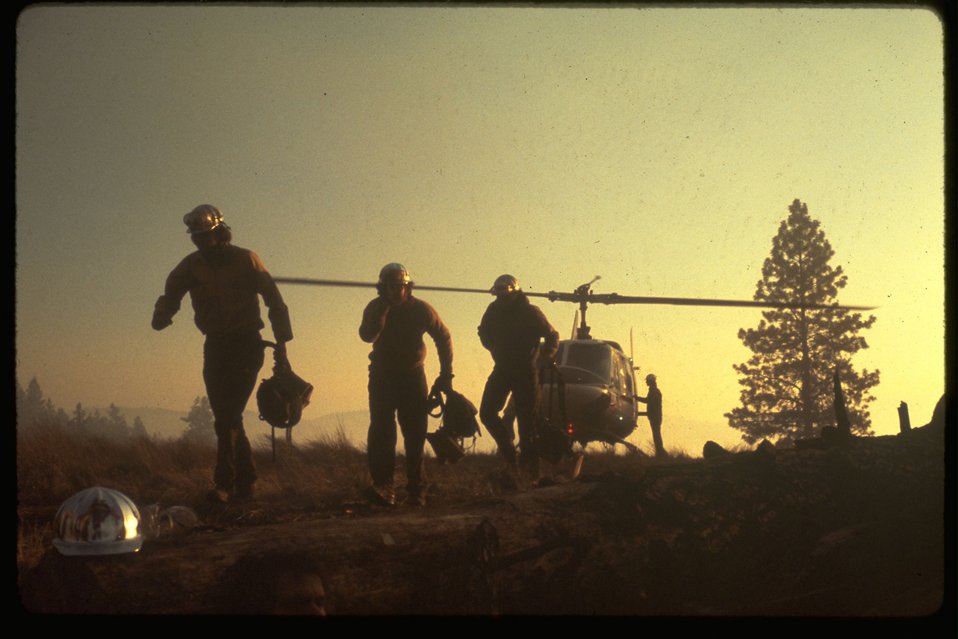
Firefighters unloading from a helicopter.